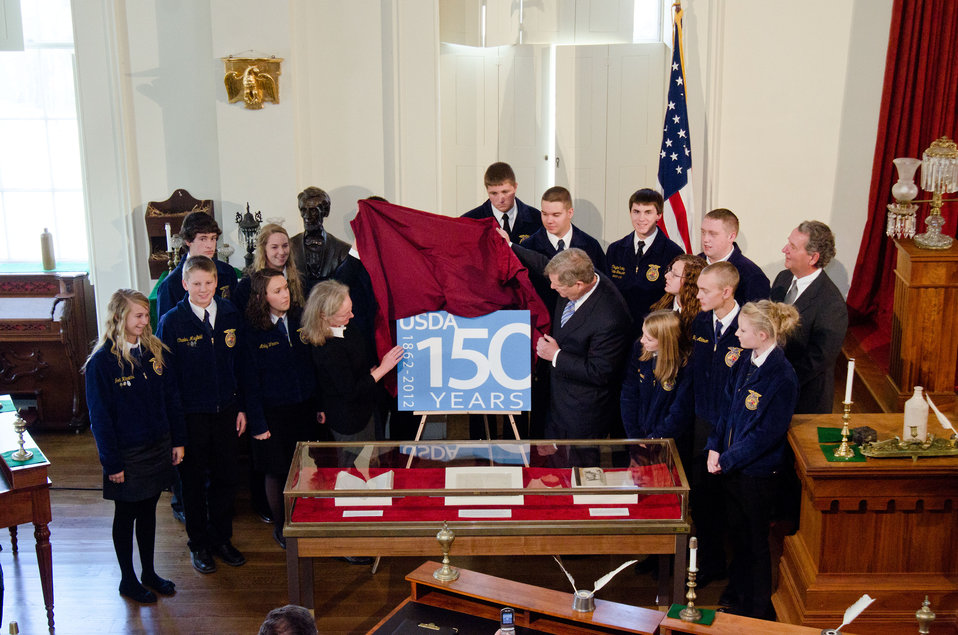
Agriculture Secretary Tom Vilsack (right) and Deputy Under Secretary for Marketing and Regulatory Programs (MRP) Ann Wright (left) with Illinois FFA unveiled the new graphic to commemorate the 150th Anniversary of U.S. Department of Agriculture in the hometown of its founder President Abraham Lincoln. The event took place at the Old State Capitol in Springfield, IL, on Wednesday, November 2, 2011.